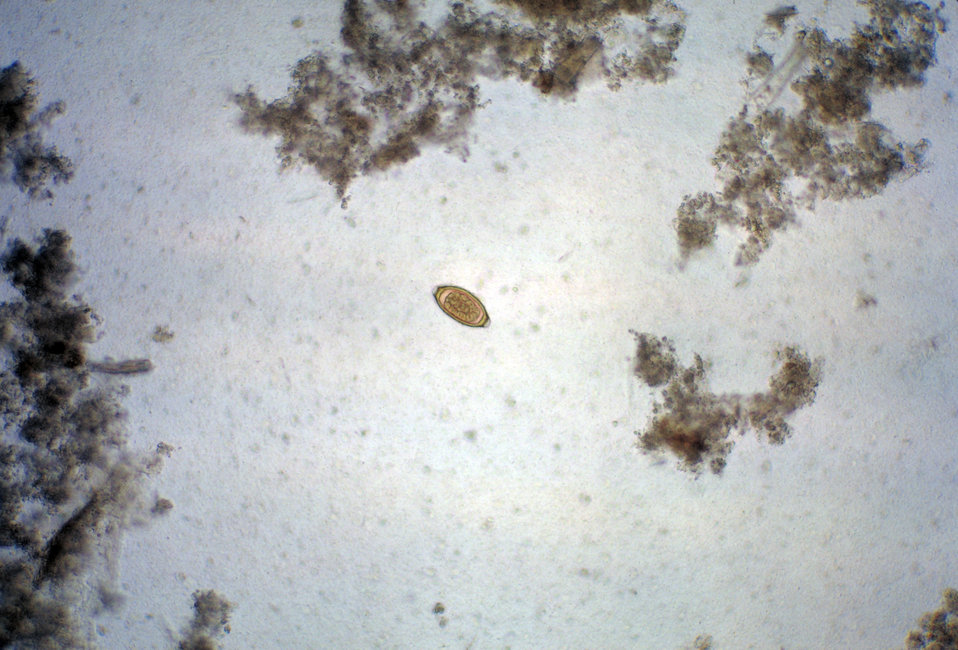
This photomicrograpg depicts an egg of a whipworm, Trichuris trichiura parasite.